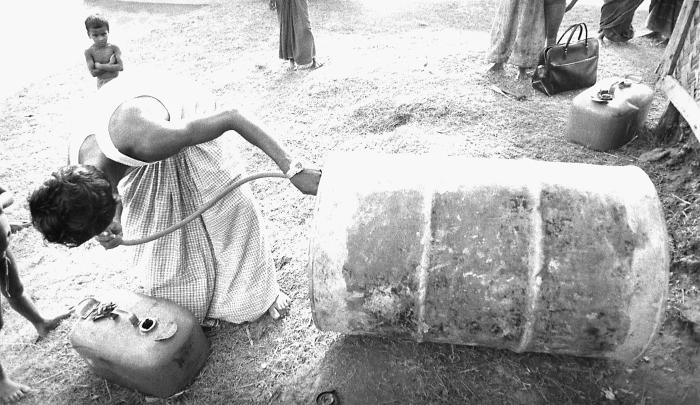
This Bangladesh man was in the process of siphoning gasoline from a drum that he was going to use to power his motor boat. With its flat bottom, the motorboat can maneuver in very shallow water, which made it quite useful transporting supplies and human resources very efficiently from village to village. This photograph provided by Dr. Stan Foster, and captured by Pierre Claquin, M.D., B.A.C., who at the time was a member of the World Health Organization's Smallpox Eradication Program. It was part of a series photographed by former E.I.S. officer, Stanley O. Foster M.D., M.P.H., and was one of a series entitled 'The Story of One Smallpox Jeep', which depicted the travails faced by the jeep, and its occupants of public health practitioners, as they road through the Bangladesh countryside in an attempt to eradicate smallpox from the country.